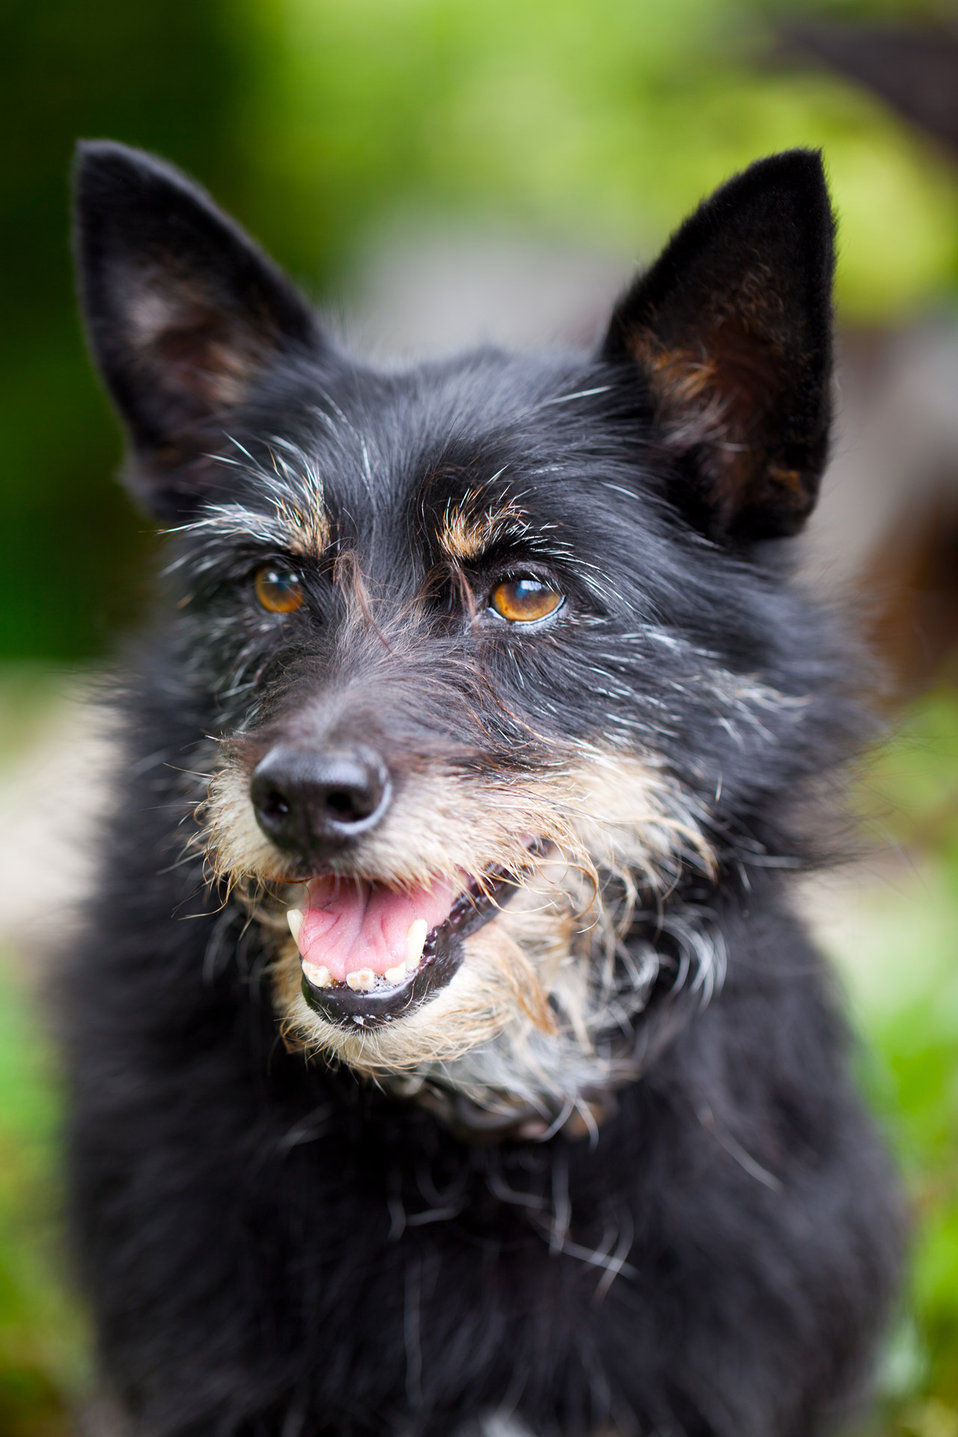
Dog portrait

Portait of a small black dog.